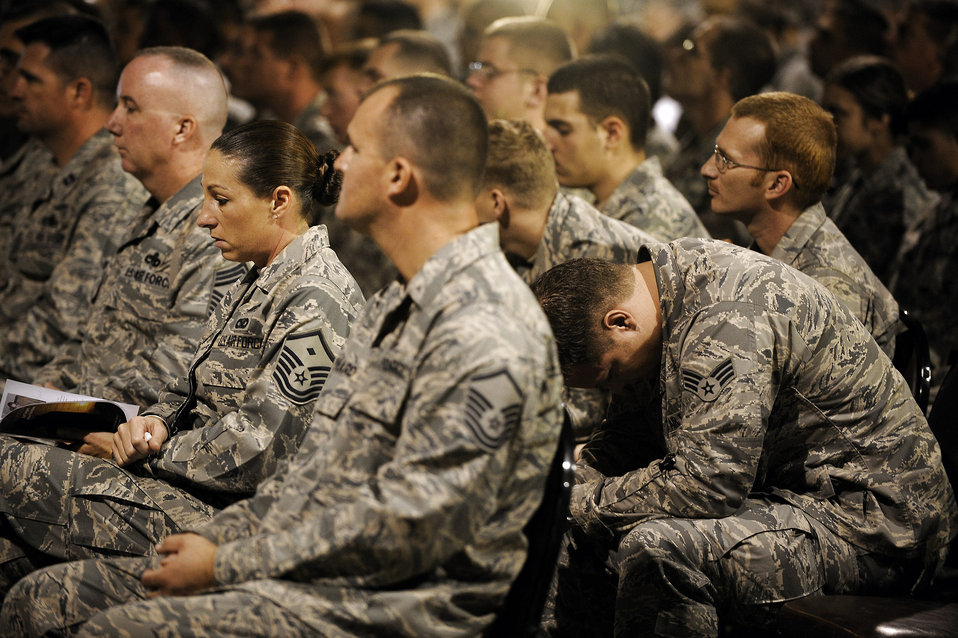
Joint Base Balad Airmen remember fallen wingman

Senior Airman Jason Watkins (right) mourns the death of Staff Sgt. Brian Hause during a memorial service held in his honor Oct. 27 at Joint Base Balad, Iraq. Sergeant Hause received an Air Force Commendation Medal and Iraq Campaign Medal posthumously for his contributions while deployed to the 332nd Expeditionary Maintenance Squadron here from Shaw Air Force Base, S.C. Airman Watkins, who deployed with Sergeant Hause, was a co-worker and friend and spoke at the memorial about memories he'll cherish.